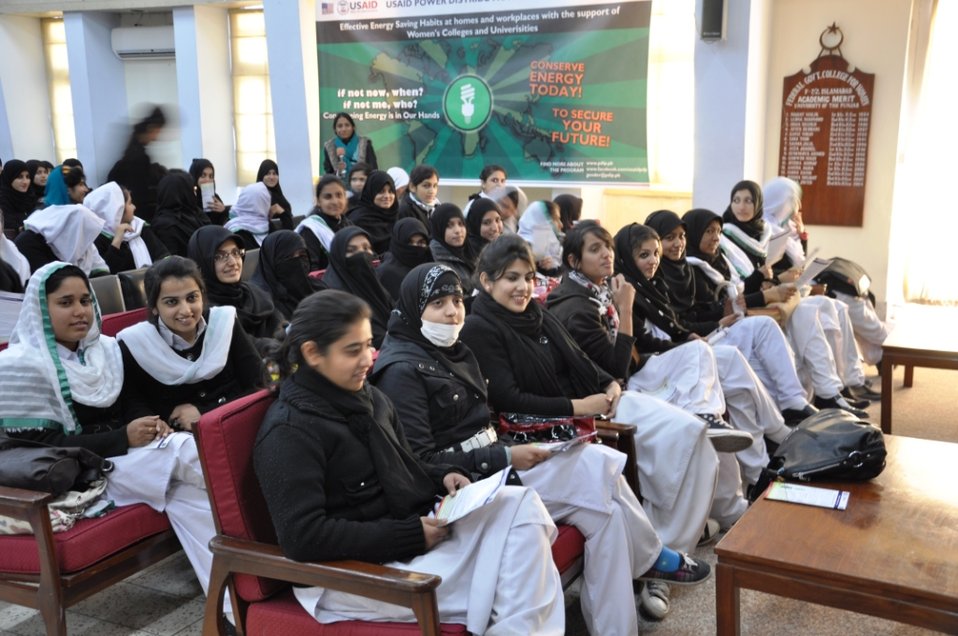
Effective Energy Saving Habits Campaign

Islamabad, January 26, 2012 - The USAID Power Distribution Program, under its Gender Strategy, held an informative talk at Islamabad Model College for Girls, F-6/2 and F-7/2, with the support of female representatives from IESCO.
The agenda of the talk was to:
• Inform students about the USAID Power Distribution Program and the role of DISOCs in Pakistan.
• Educate students and teachers about the effective energy saving methods they can apply at homes, schools and work places.
• Enlighten female students about their workplace rights and inform them about various employment opportunities in the power sector.